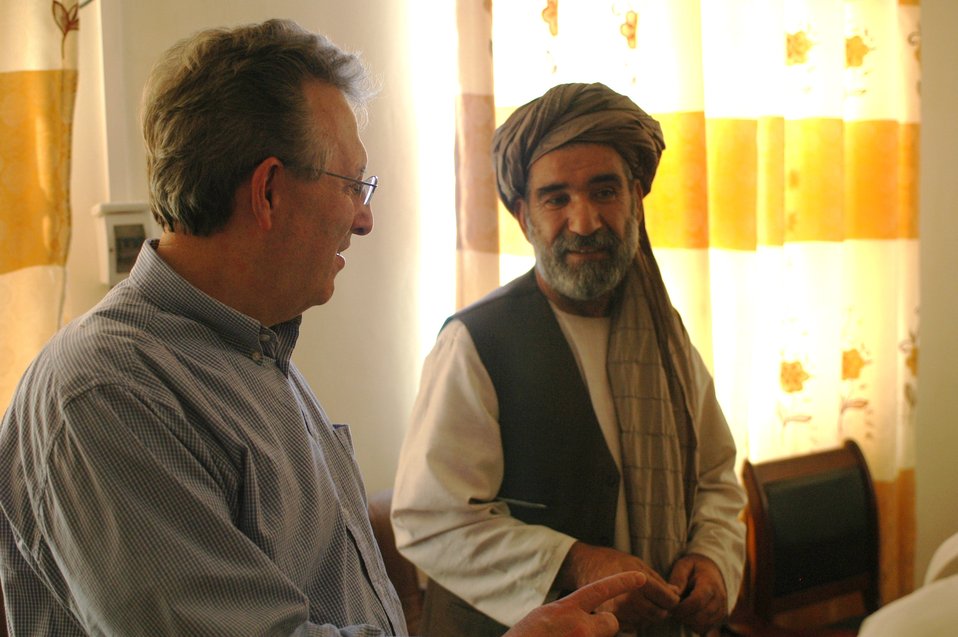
Dr Shah Visits Argandab April 10, 2010